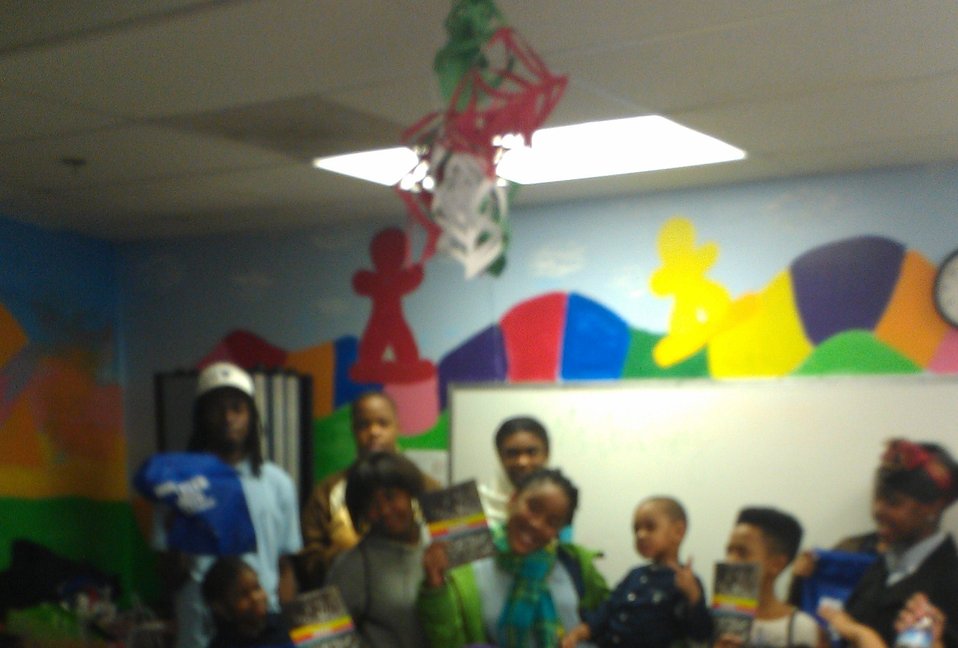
Washington, D.C. Youth, NDFW 2013

Sasha Bruce Youthwork, Inc. sponsor 2013 NDFW events for youth in Prevention Centers in Wards 5 & 6, Washington, D.C.